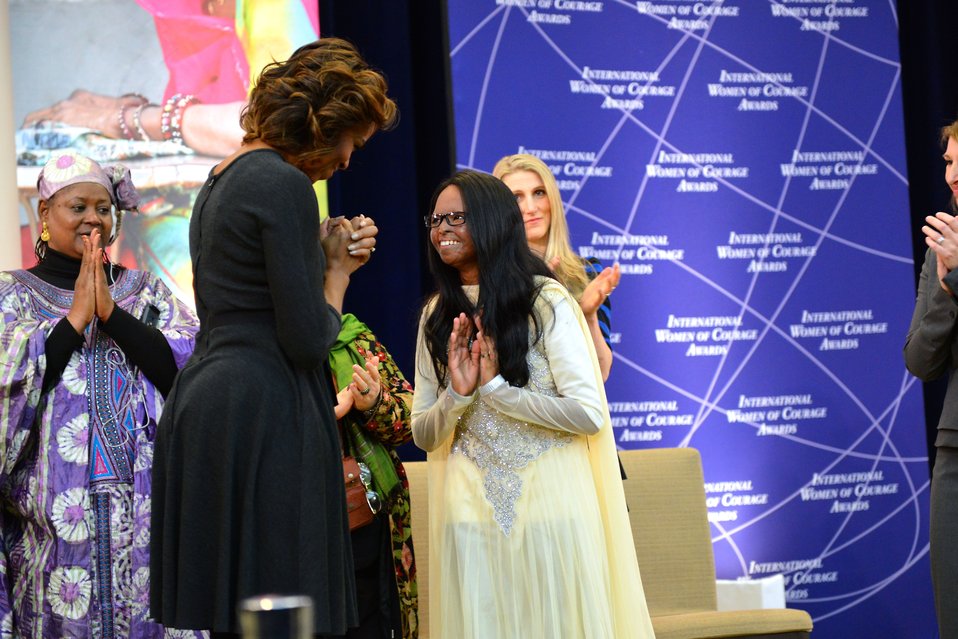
First Lady Michelle Obama Honors 2014 IWOC Awardee Laxmi of India

First Lady Michelle Obama honors 2014 International Women of Courage Awardee Laxmi, a Campaigner for Stop Acid Attacks in India, at the 2014 Secretary of State’s International Women of Courage Award Ceremony at the U.S. Department of State in Washington, D.C., on March 4, 2014.